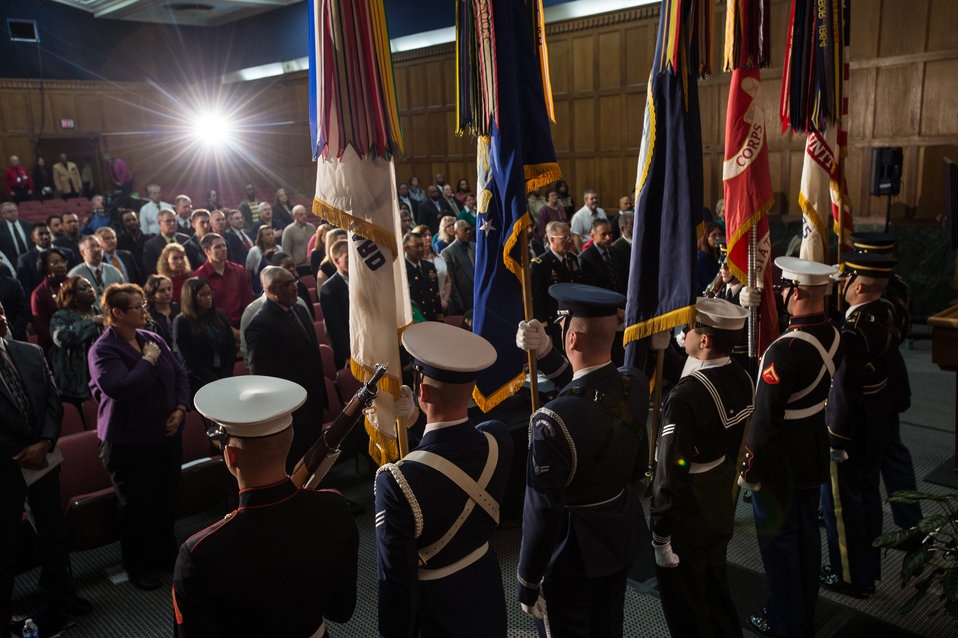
The U.S. Military District of Washington Joint Armed Forces Color Guard present the Colors, during the 2013 U.S. Department of Agriculture (USDA) Veterans’ Day Observance, whose theme is “VALOR, COURAGE, SACRIFICE – HONORING ALL WHO SERVED,” in Washington, DC, on Wednesday, November 20, 2013.